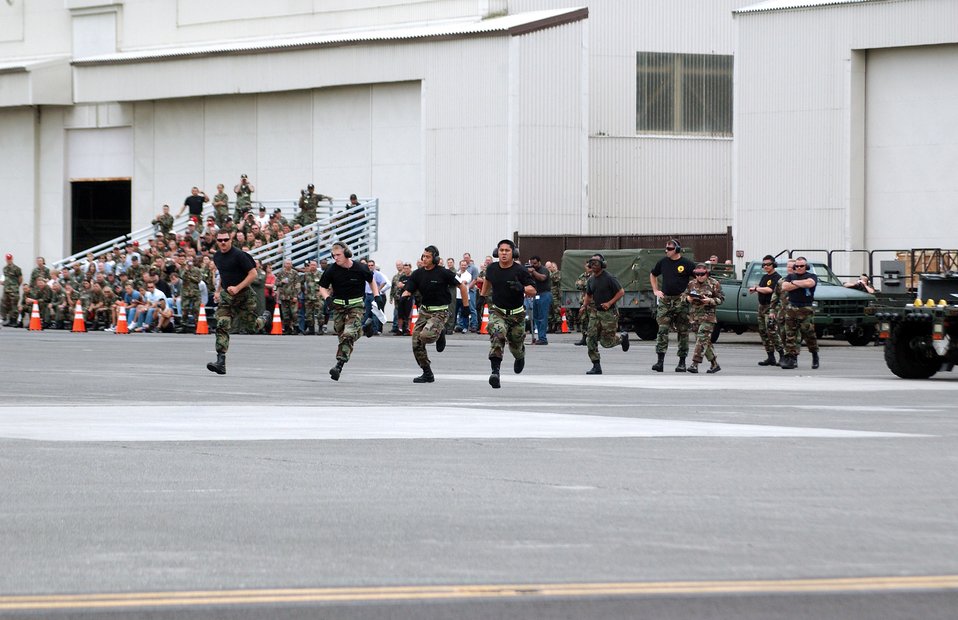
Racing at Rodeo

MCCHORD AIR FORCE BASE, Wash. -- Airmen rush to get into formation here June 21 to begin an event during Rodeo 2005 competition. During the event, Rodeo competitors had to load and unload a Humvee and K-loader from a C-17 Globemaster III with its engines running. The Airmen are assigned to the 62nd Airlift Wing.